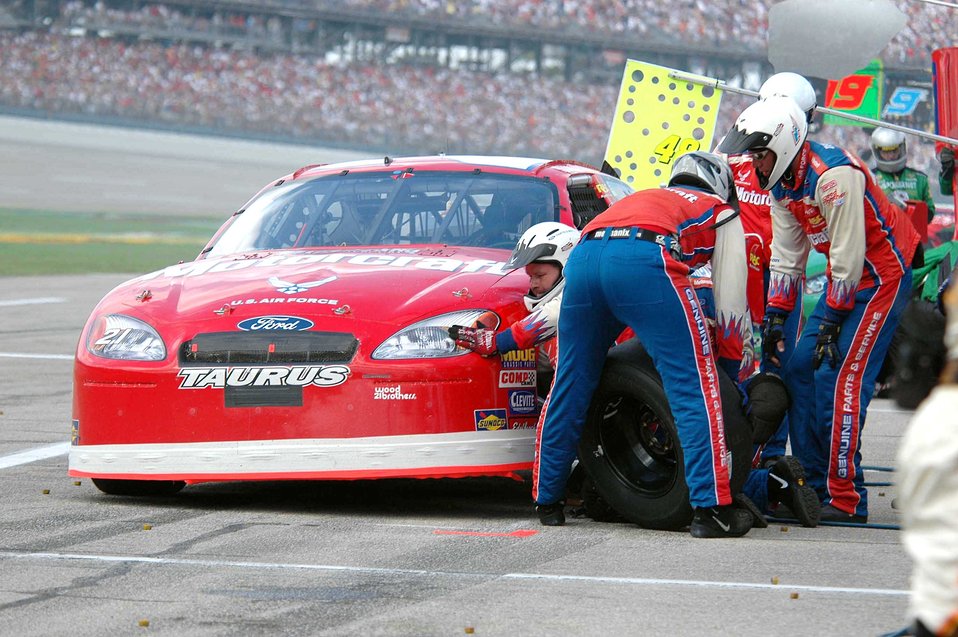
Eglin firemen keep NASCAR teams safe

TALLADEGA, Ala. -- The Wood Brothers Racing Team conduct a 10-second pit stop on the No. 21 Air Force-sponsored NASCAR. The car was recently driven by Ricky Rudd at Talladega Superspeedway on Oct. 2. Four firefighters from Eglin Air Force Base, Fla., are among a group of firefighters from all over the country who travel each spring and fall to keep NASCAR drivers and race teams safe.